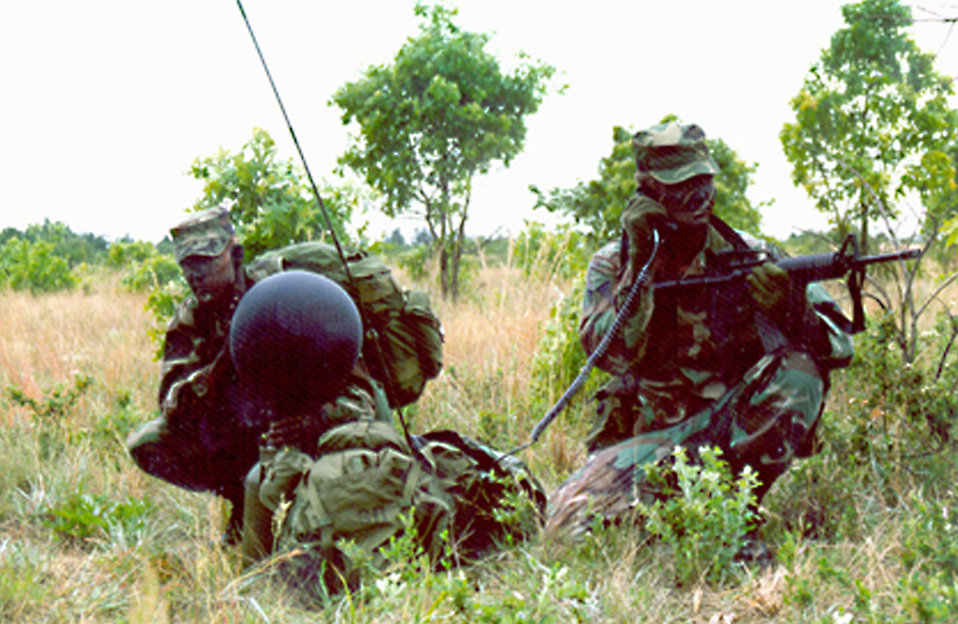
Combat weather

HURLBURT FIELD, Fla. -- Combat weathermen participate in training exercises.